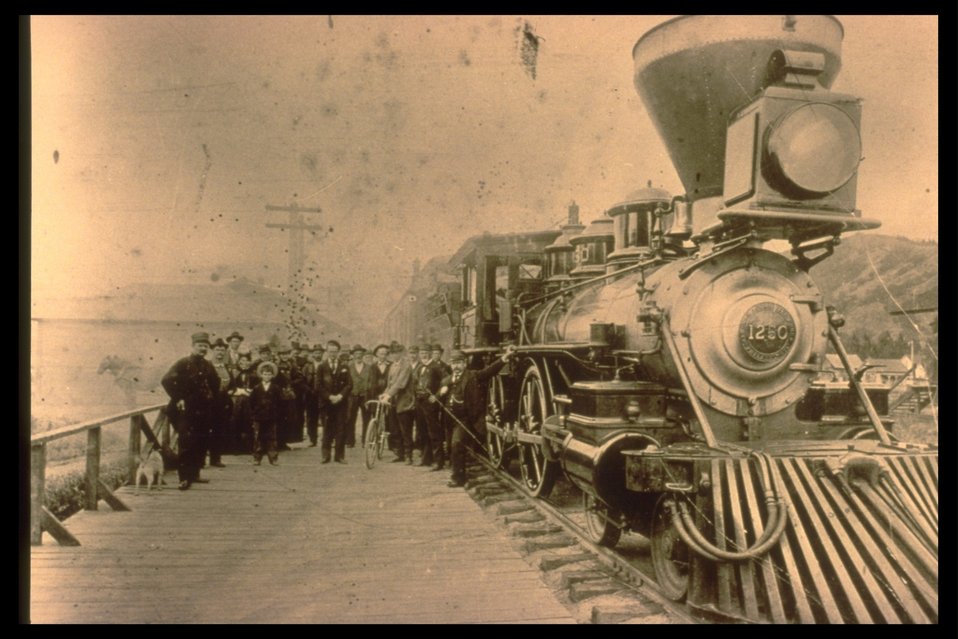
Black and white photo of a group posing next to an old steam engine train.